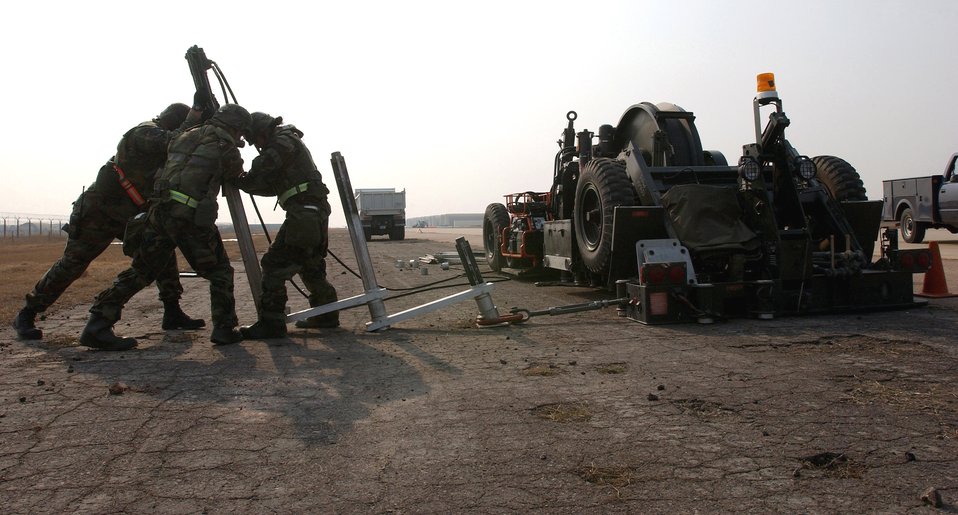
Keeping the runway in tip-top shape

Airmen from the 8th Civil Engineer Squadron airfield damage repair team install anchors Feb. 21 for the mobile aircraft arresting system at Kunsan Air Base, Korea. The arresting system is used to stop a damaged aircraft that cannot stop on its own during landing. ADR teams do everything from crater repair to airfield lighting making it possible to get aircraft back in the air quickly.